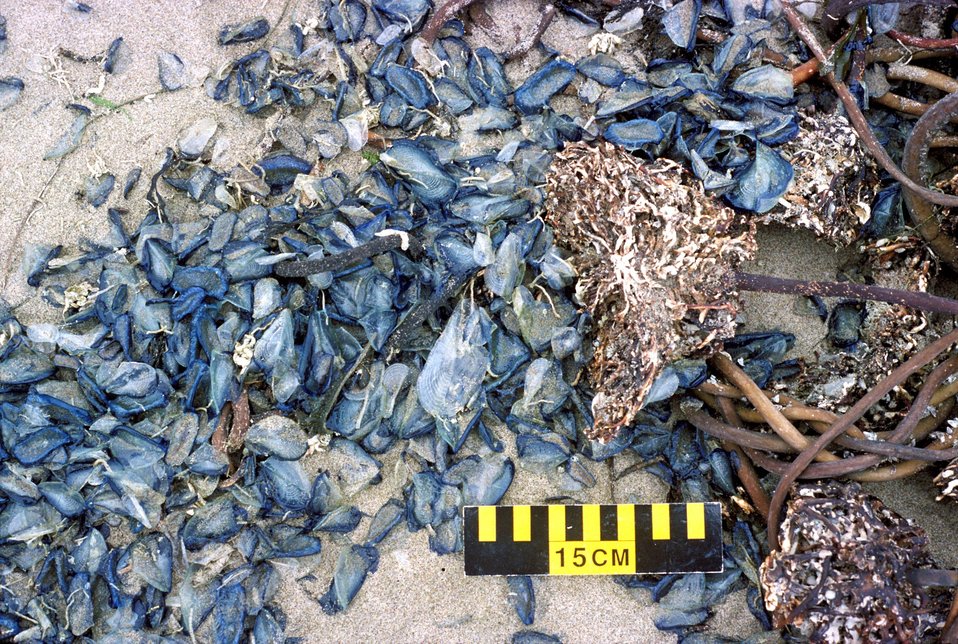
Point Reyes Great Beach. Velella velella - by-the-wind sailors and kelp holdfasts washed ashore